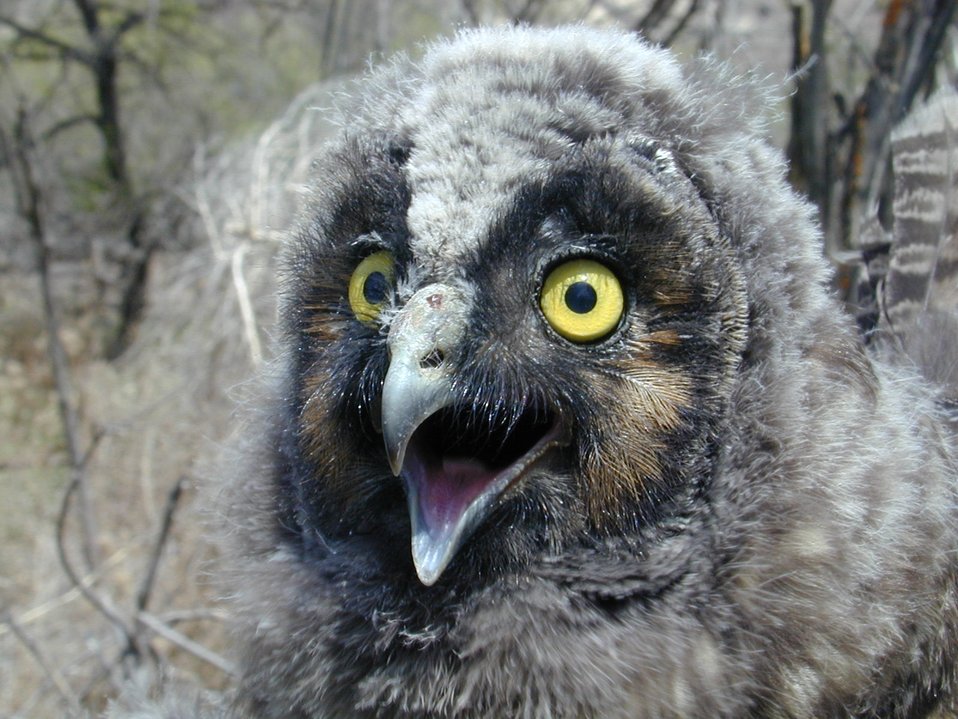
Environmental Education Fire Workshop Timberline High School Fall 2000